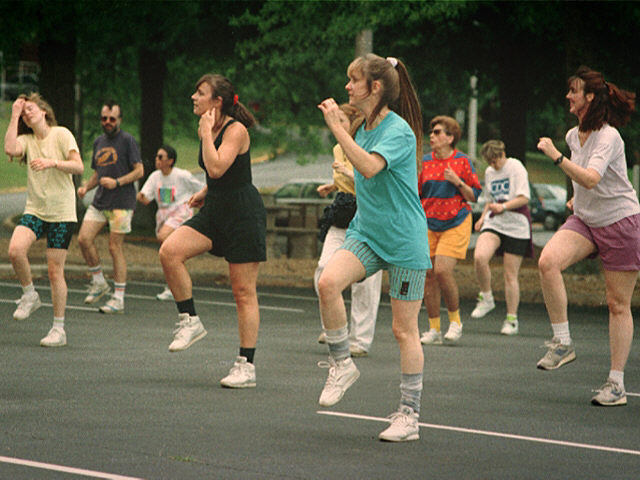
Aerobic exercise.